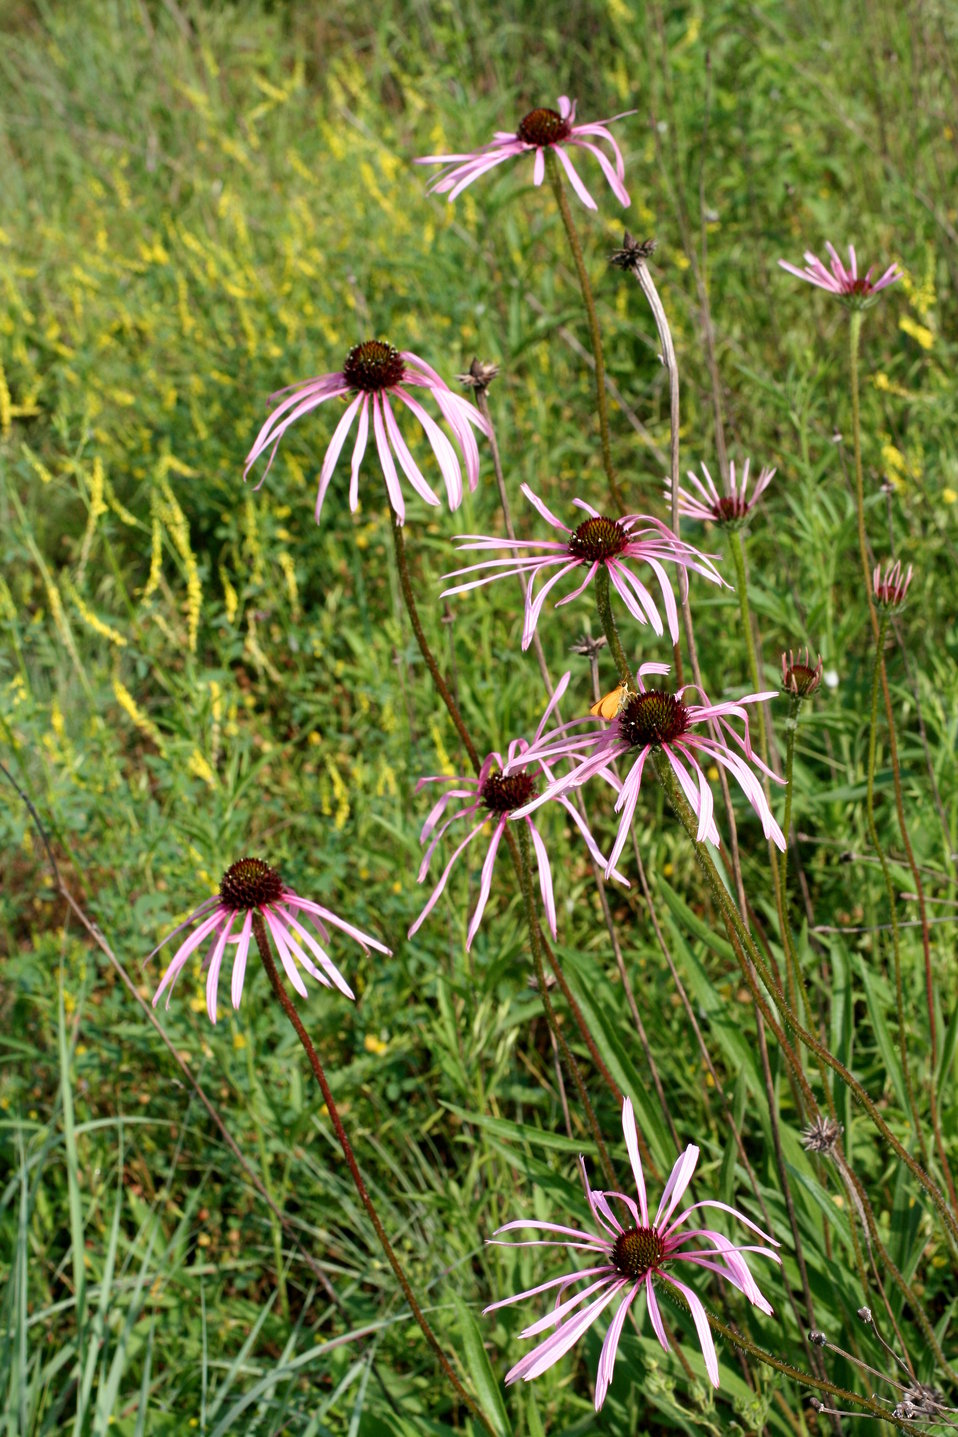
Pale purple coneflower with skipper butterfly.